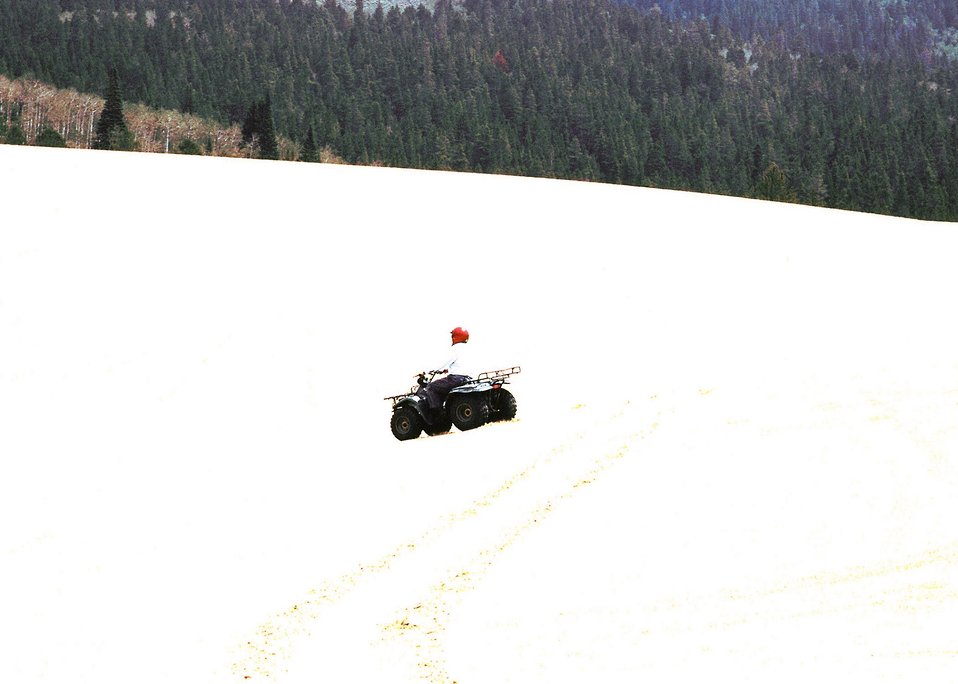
Sand Hills OHV (Dunes)